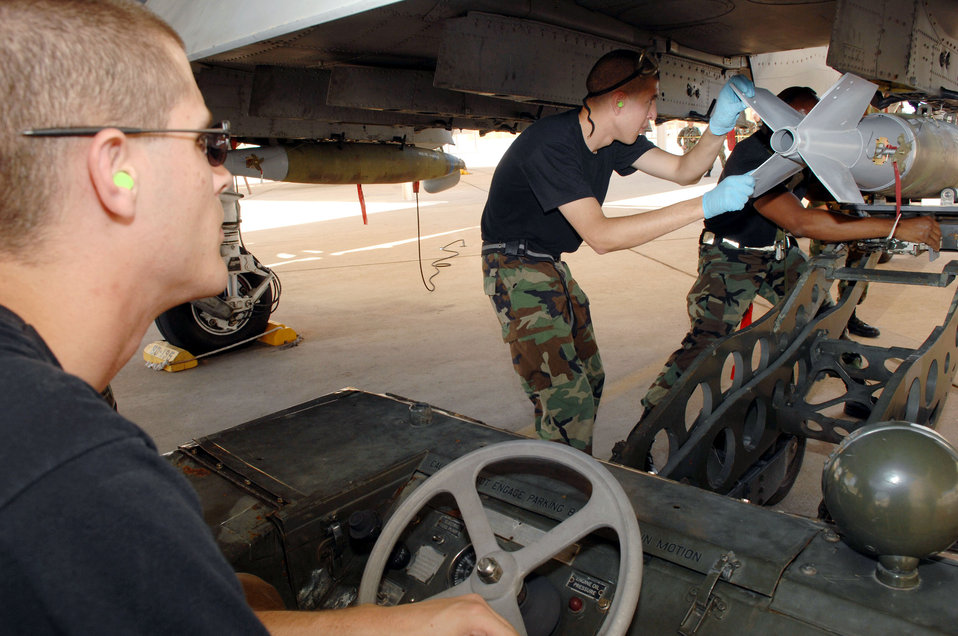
Load crew competition

Airman 1st Class Mark Robinson waits for a signal from his teammates, Airman 1st Class Brandon Hackney and Staff Sgt. Roland Harvey, as they guide him to maneuver his jammer vehicle carrying a MK-82 into position under an A-10 Thunderbolt II July 20. The Airmen are assigned to the 357th Aircraft Maintenance Unit, and were competing in the quarterly load crew competition at Davis-Monthan Air Force Base, Ariz. The event is used to boost group morale while enhancing warfighting skills.